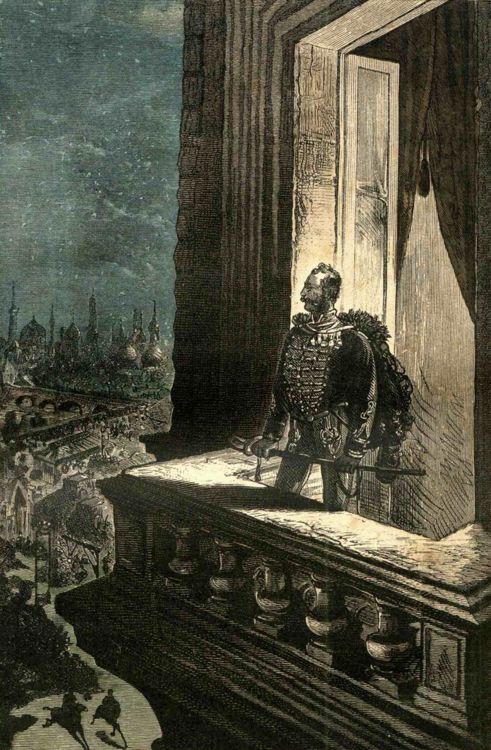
An illustration from the novel 'Michael Strogoff: The Courier of the Czar' by Jules Verne drawn by Jules Férat. Polski: Ilustracja powieści Juliusza Verne'a 'Michał Strogow, kurier carski' autorstwa Julesa Férata. Français : 'Michel Strogoff. Le courier du tzar', Jules Férat. Français : Il vint respirer sur un large balcon…